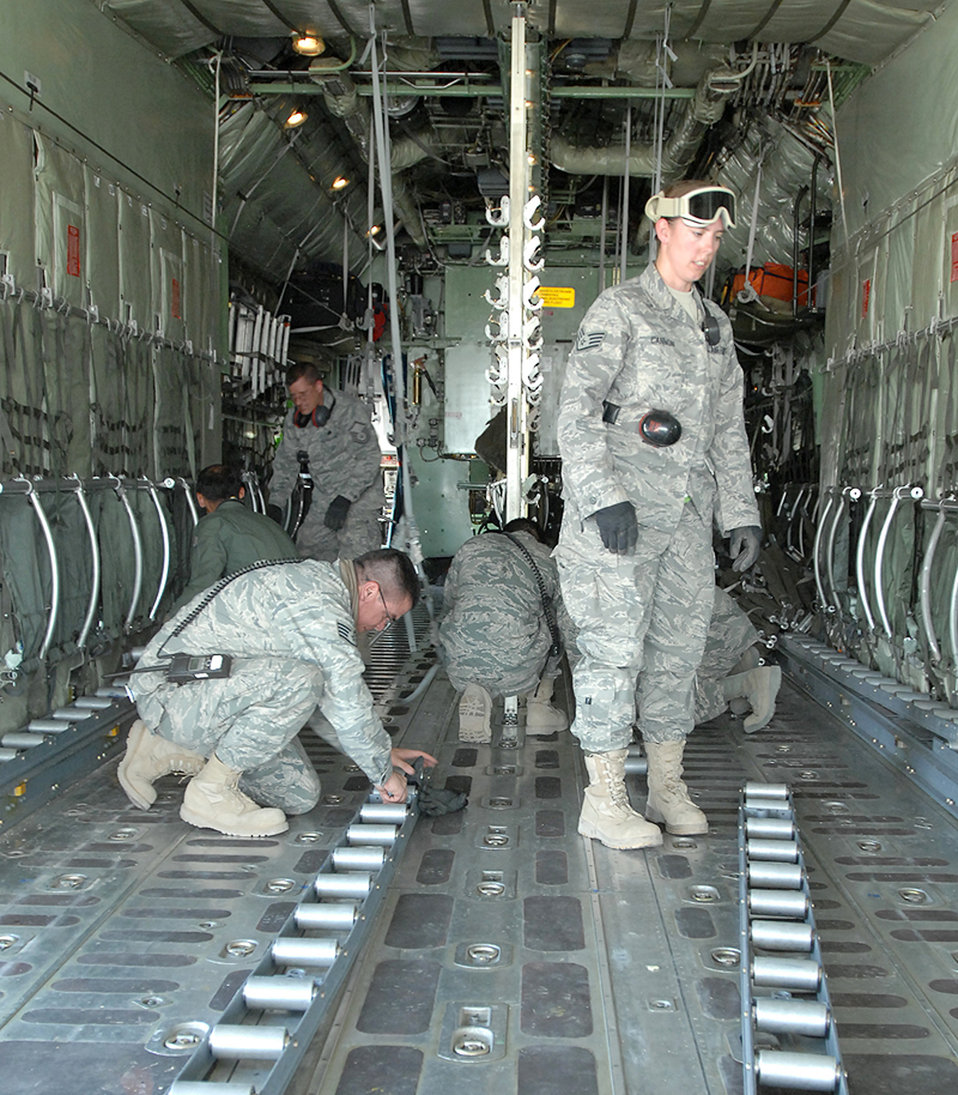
Coalition forces, Kirkuk officials partner to care for bombing victims

Airmen from the 506th Expeditionary Logistics Readiness Squadron assist a Turkish air force C-130 aircrew prepare the aircraft for patient transport June 22 at Kirkuk Air Base, Iraq. U.S. and Turkish airmen, U.S. State Department officials at the Kirkuk Provincial Reconstruction Team, and Turkish Red Crescent Society medical responders helped coordinate and facilitate an aeromedical evacuation for 11 victims of a June 20 suicide truck bombing in Taza District south of Kirkuk city. More than 80 people were killed and 250 injured in the blast.